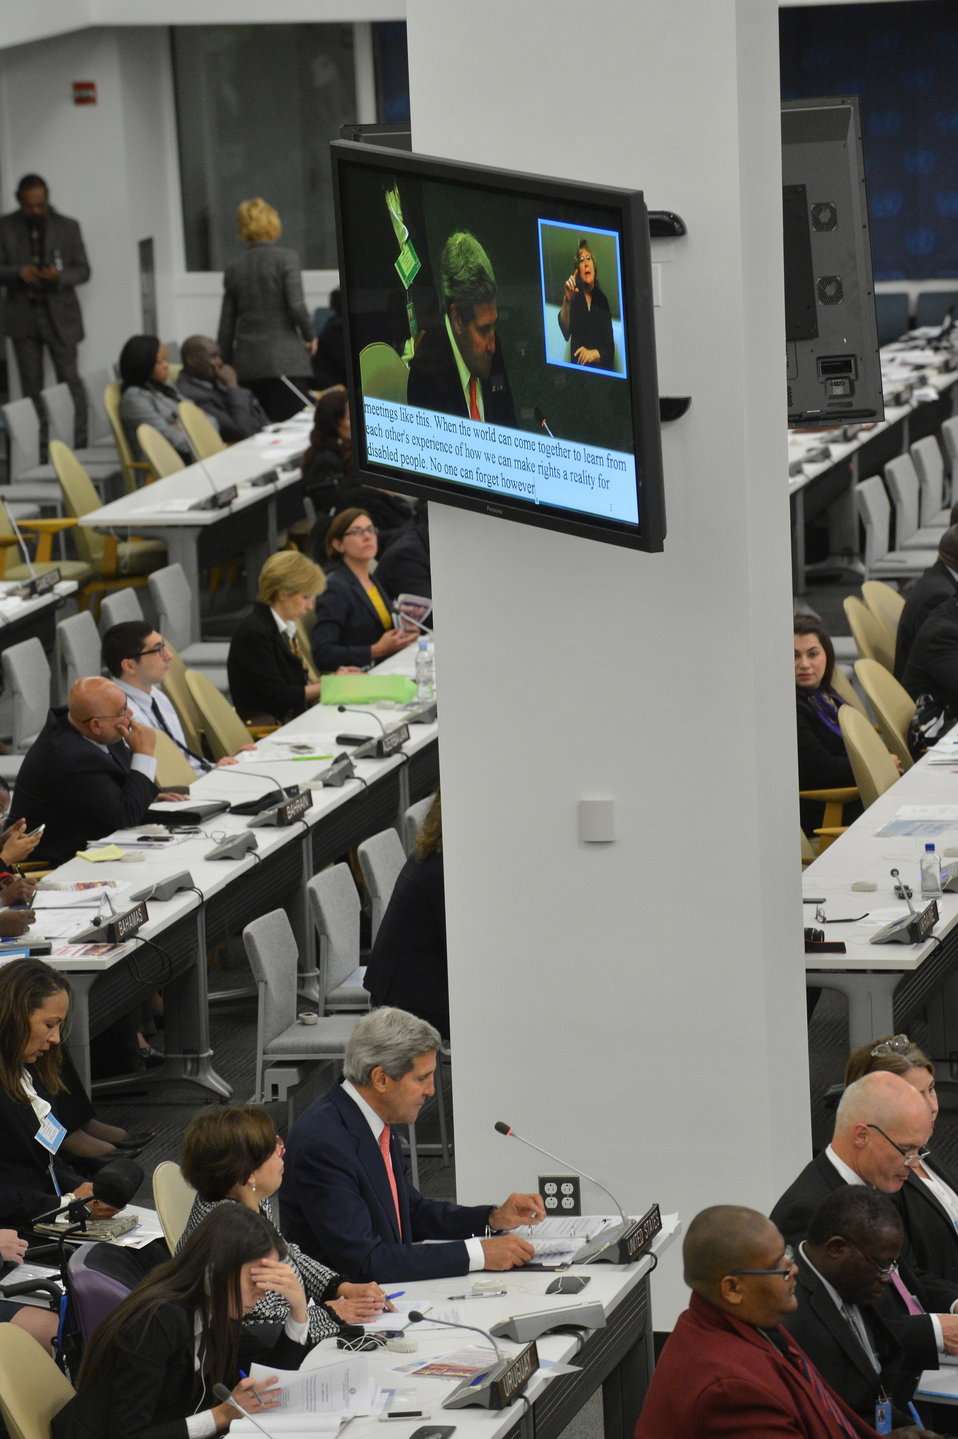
Secretary Kerry Participates in a Meeting on Disability and Development

U.S. Secretary of State John Kerry participates in a high level meeting of the United Nations General Assembly on disability and development at the United Nations in New York City on September 23, 2013.